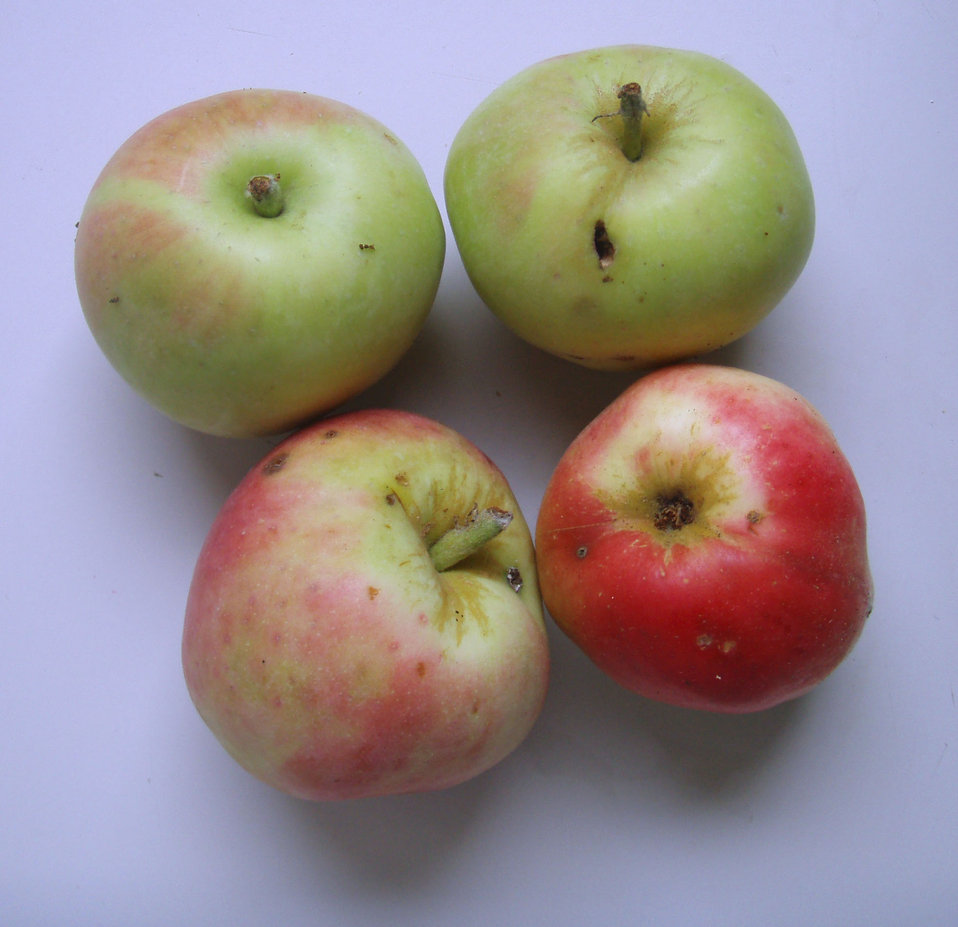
Српски / srpski: Јабуке Петроваче, снимио Ранко Томић